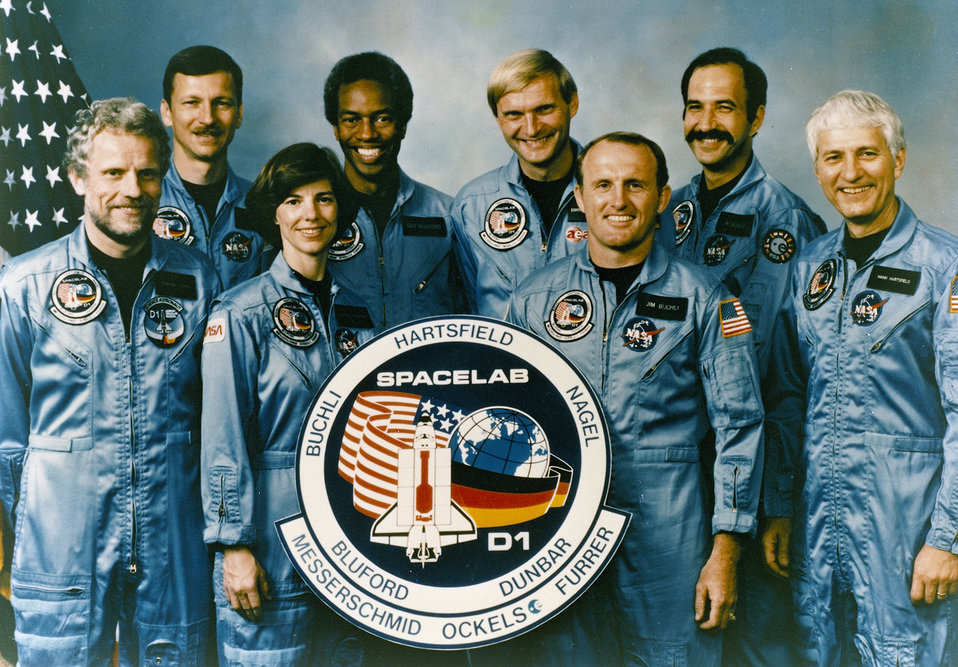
Col. Guion Bluford: First African-American astronaut